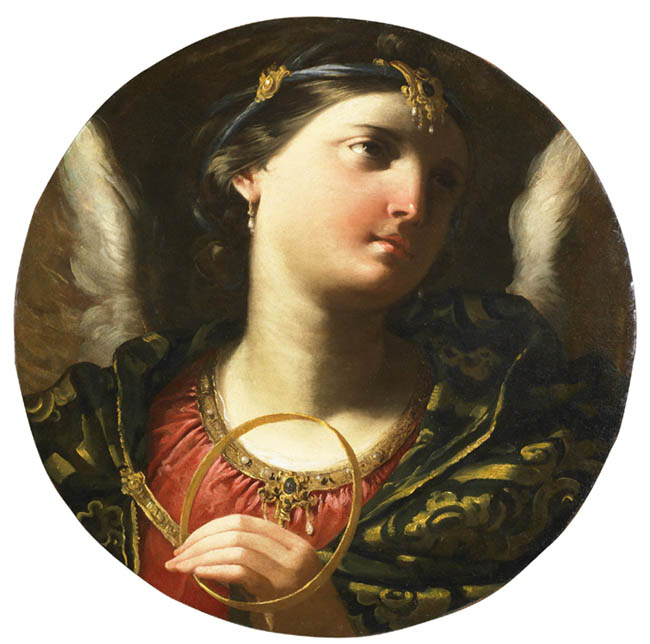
Alegoría de la Eternidad 1686